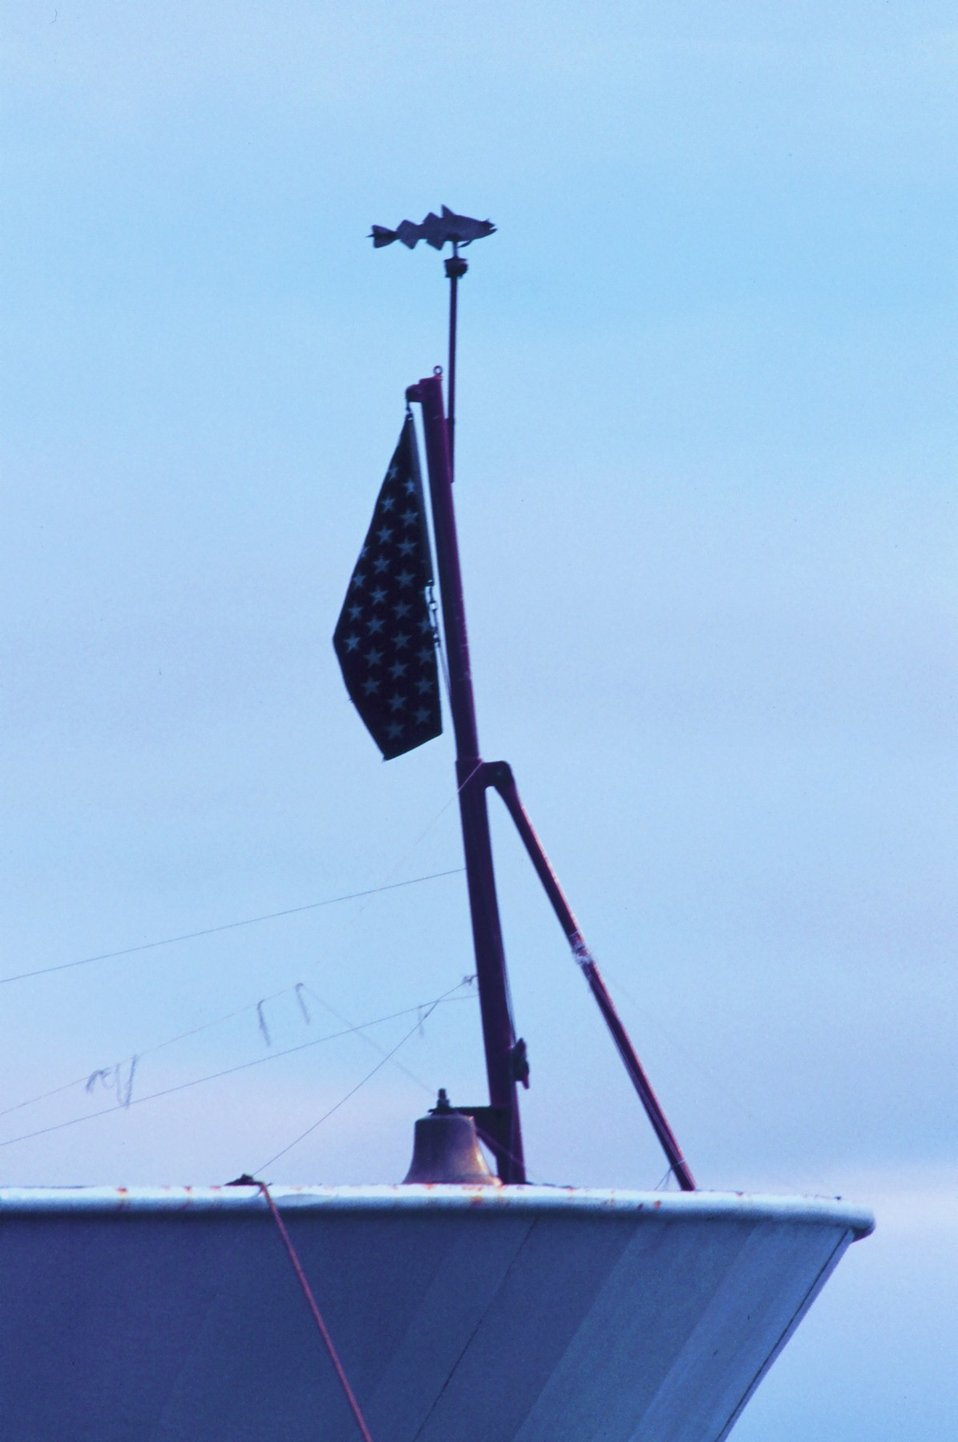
Old-fashioned fish wind-vane on the bow of the MILLER FREEMAN